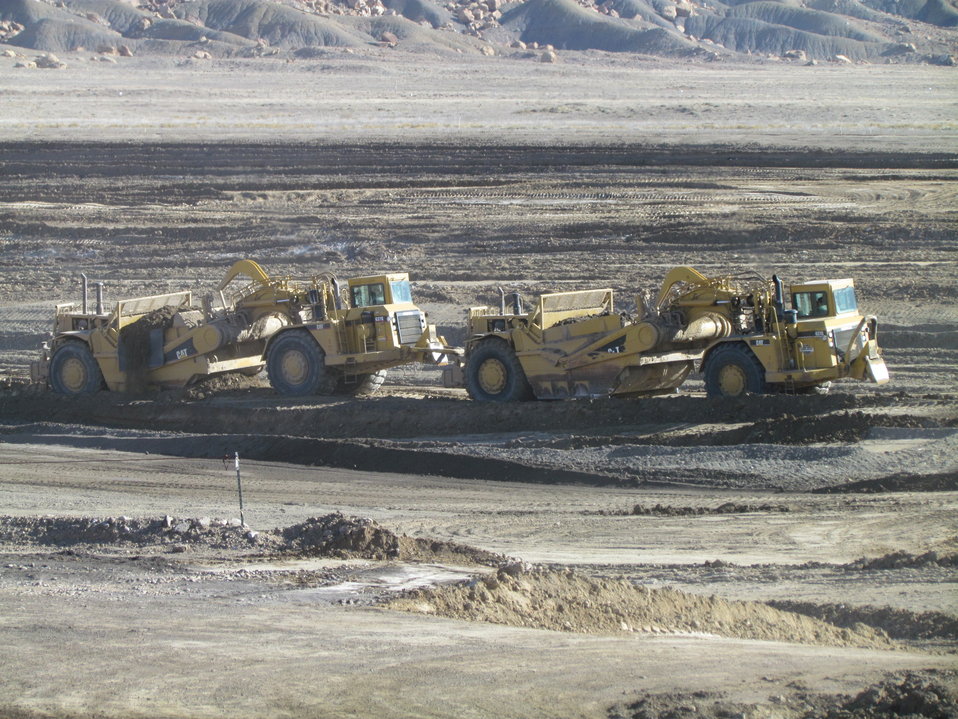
Moab Mill Tailings Project Marks Many Recovery Act Accomplishments

Two scrapers work together to excavate Mancos Shale at the Crescent Junction site to create the second portion of a disposal cell for uranium mill tailings.